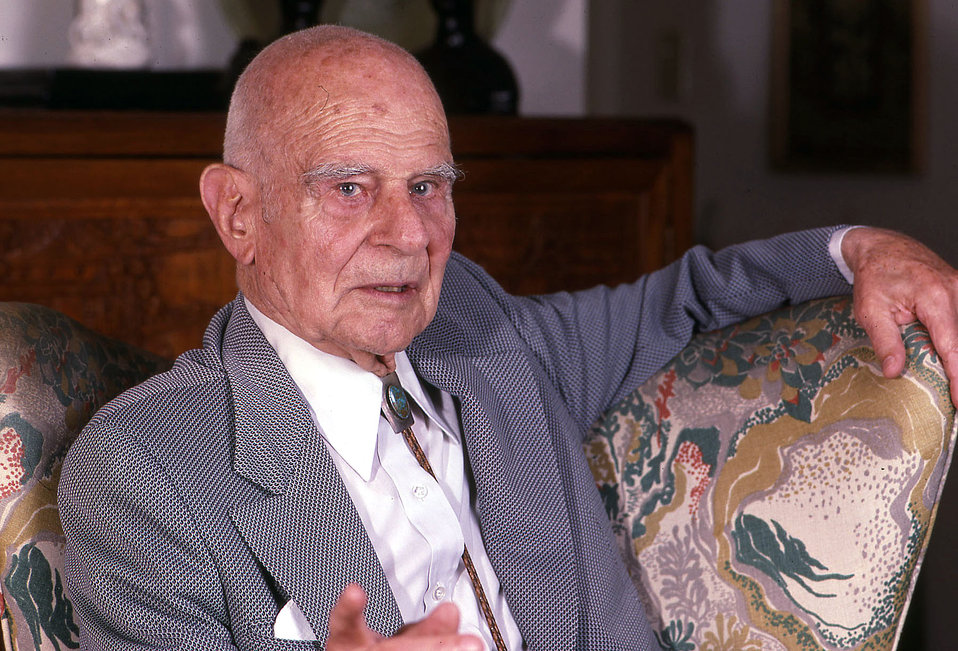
Gen. Jimmy Doolittle tells his story in an interview with Airman magazine in 1986.